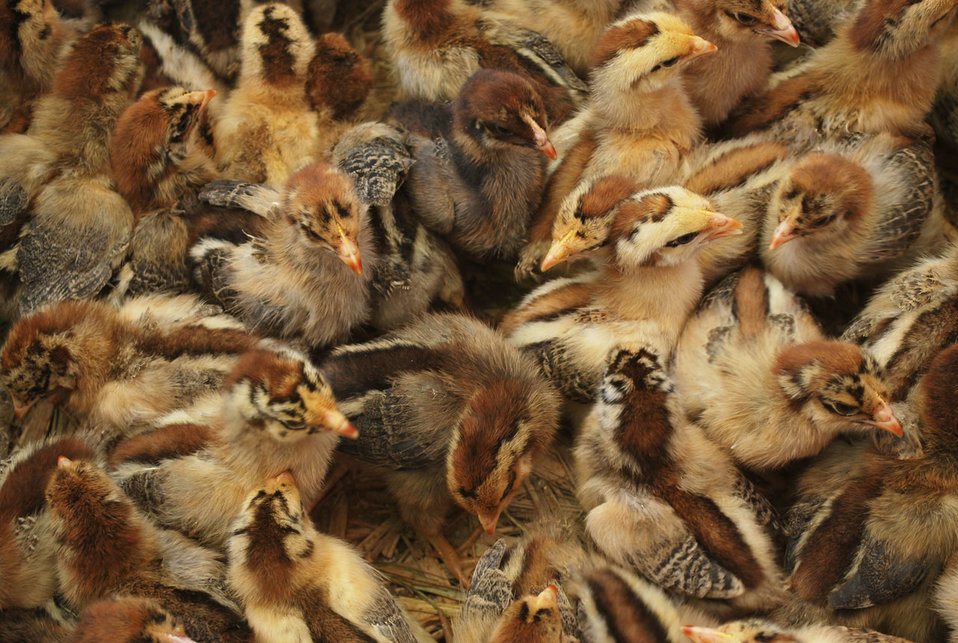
Baby chicks

Baby chickens.